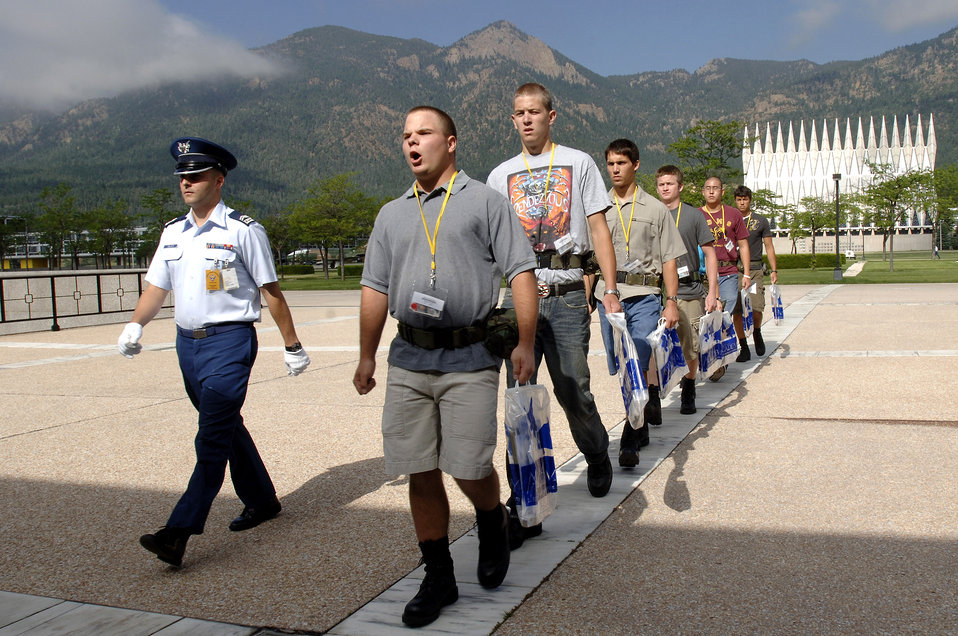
Welcome to the Air Force

Basic cadet trainees assigned to cadet squadron 31 are marched across the Terrazzo during inprocessing of the Class of 2011 June 28 at the U.S. Air Force Academy in Colorado. The 1,304 members arrived June 28 to begin basic cadet training.